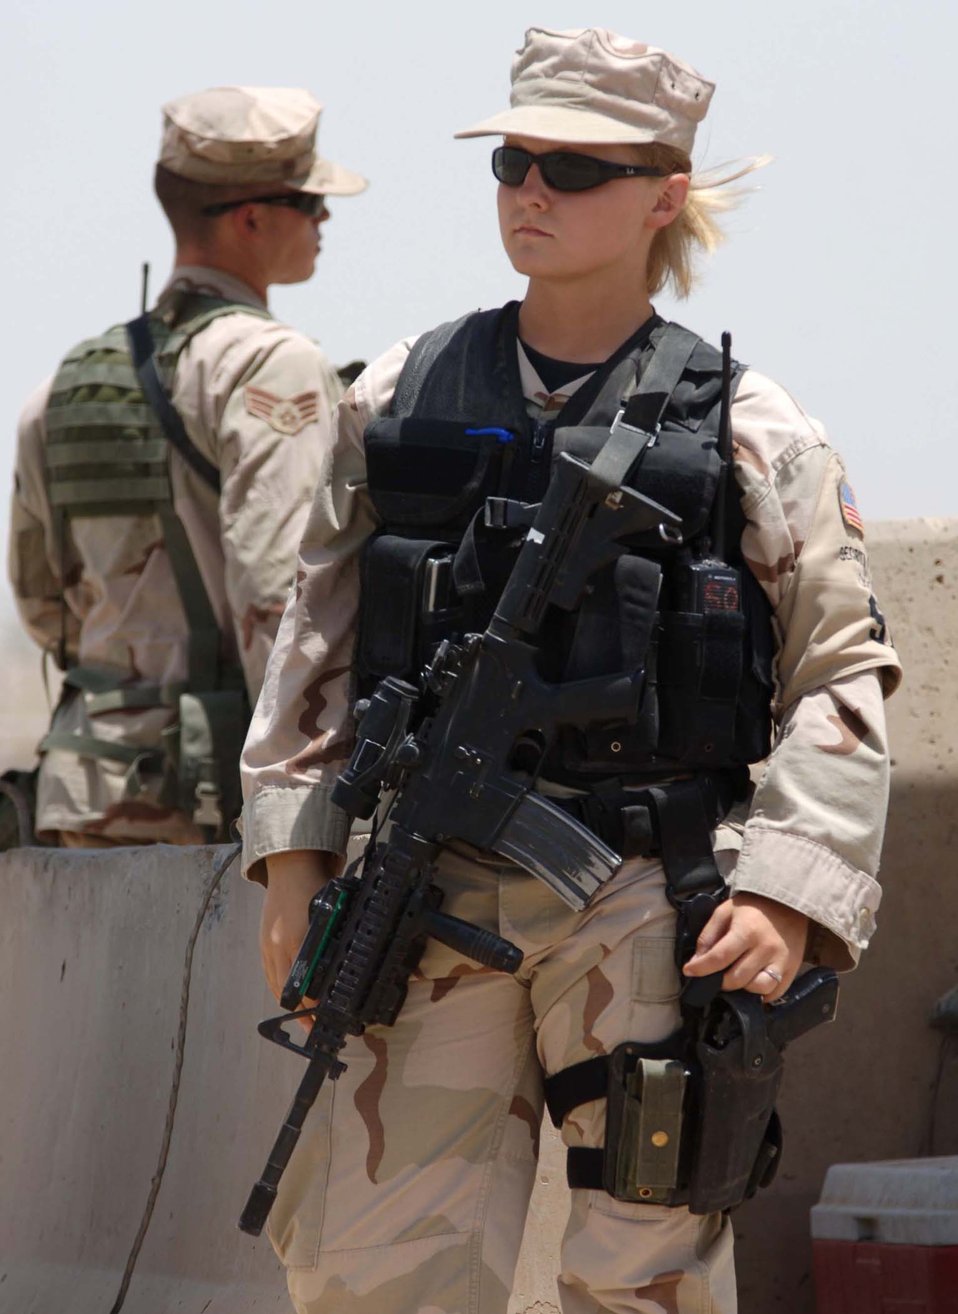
Security forces Airmen protect Sather Air Base

Airman 1st Class Tiffany Buck and Senior Airman Benjamin Hudson stand watch at Echo One, the main gate at Sather Air Base, Iraq. As part of the search pit team, they are the people who decide what vehicles and persons require searching. The Airmen are assigned to the 447th Expeditionary Security Forces Squadron.